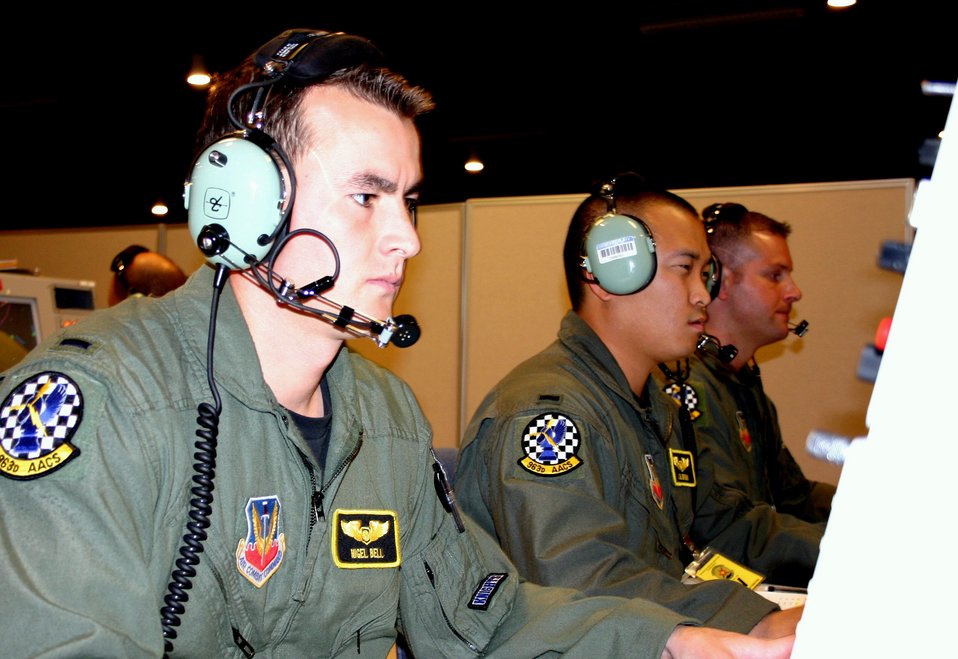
Virtual Flag 06

KIRTLAND AIR FORCE BASE, N.M. (AFPN) -- 1st Lts. Nigel Bell (left) and Jerrad Brown (center) work to control the aerial battlespace during exercise Virtual Flag 06 at the Distributed Mission Operations Center here. The lieutenants completed this mission Nov. 3 and are both from the 963rd Airborne Air Control Squadron.